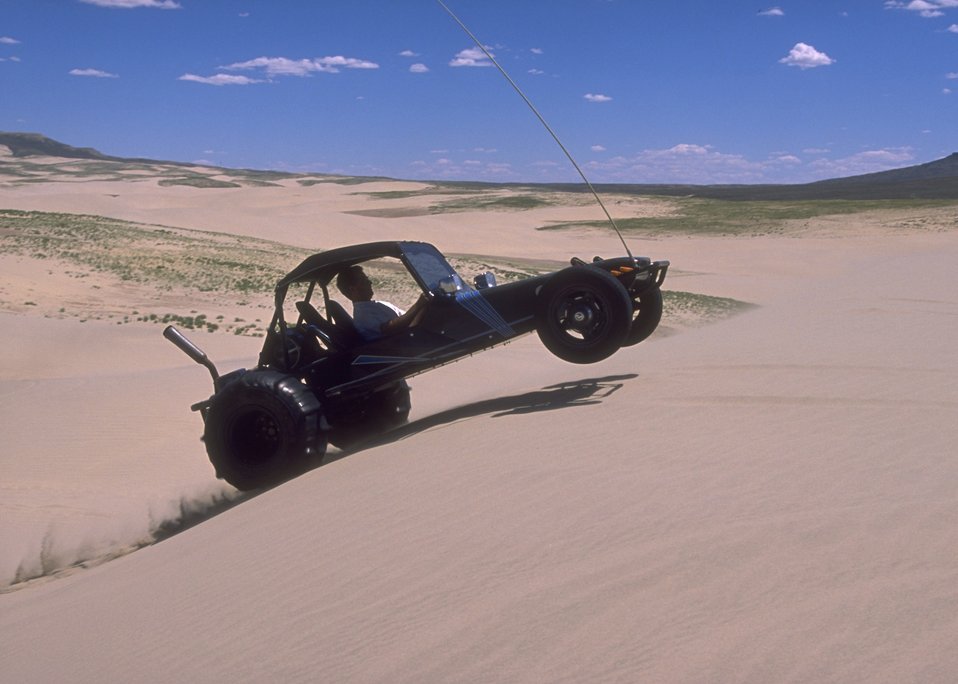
Sand Dunes OHV Area, Rock Springs Field Office.